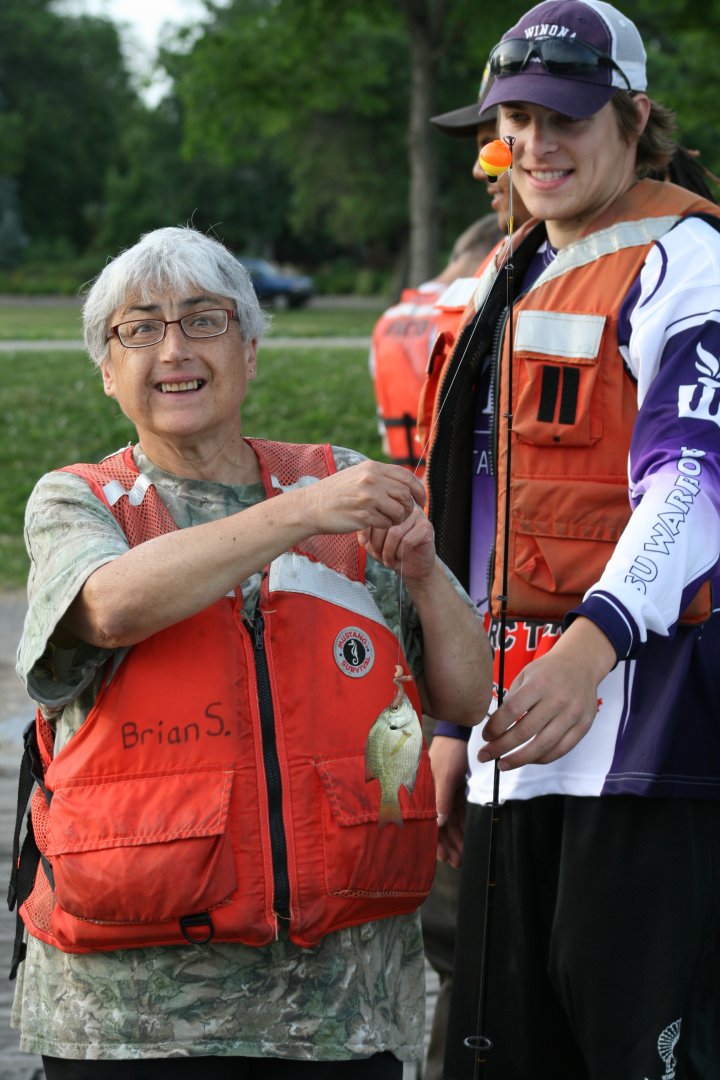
Volunteer Harrison assists a Project Compass client

Winona State University fishing club member Harrison Barton poses with a happy Project COMPASS client and her catch.